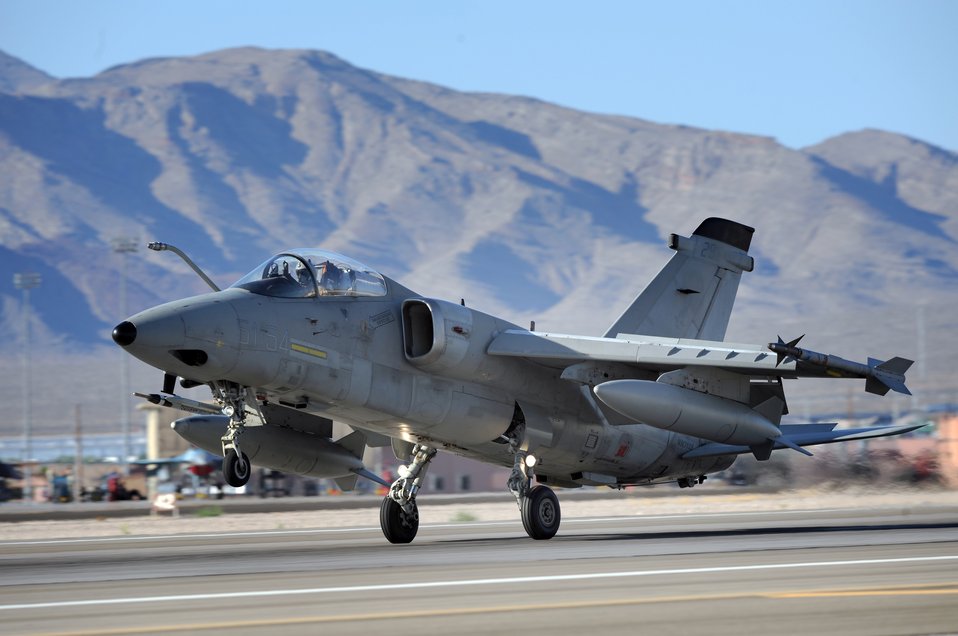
Red Flag trains combat air forces

An Italian Air Force AMX fighter takes off during a Red Flag training mission Aug. 26, 2009 at Nellis Air Force Base, Nev. Red Flag is a realistic air combat training exercise conducted over the 15,000-square-mile Nevada Test and Training Range north of Las Vegas. U.S. Air Force, Navy and Marines Corps units are participating in Red Flag 09-5 along with allied forces from Italy and the United Arab Emirates.